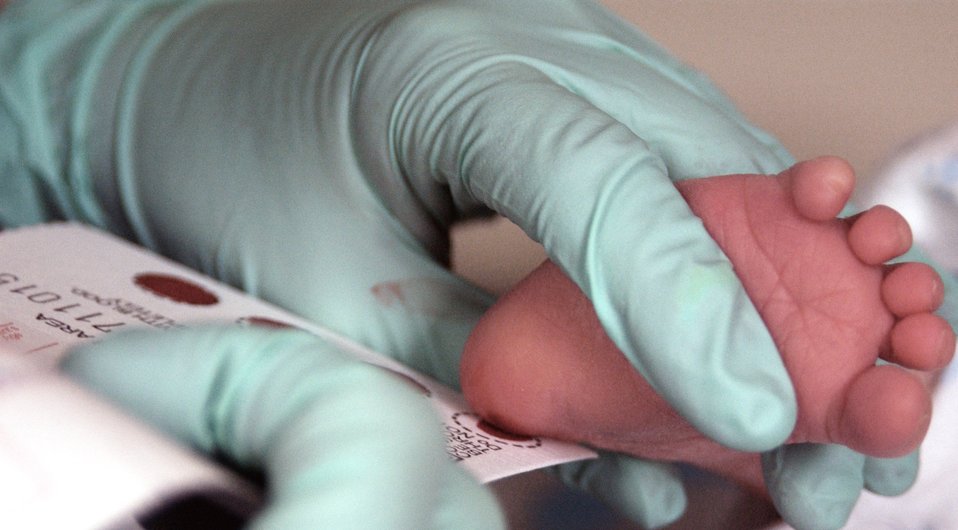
Testing samples

The blood of a two week-old infant is collected for a Phenylketonuria, or PKU, screening Dec. 12 at Eielson Air Force Base, Alaska. PKU is a recessive genetic disorder that can cause problems with brain development, which could lead to mental retardation and seizures. All infants born at Eielson AFB are screened for PKU at their two-week, well baby check up appointment.